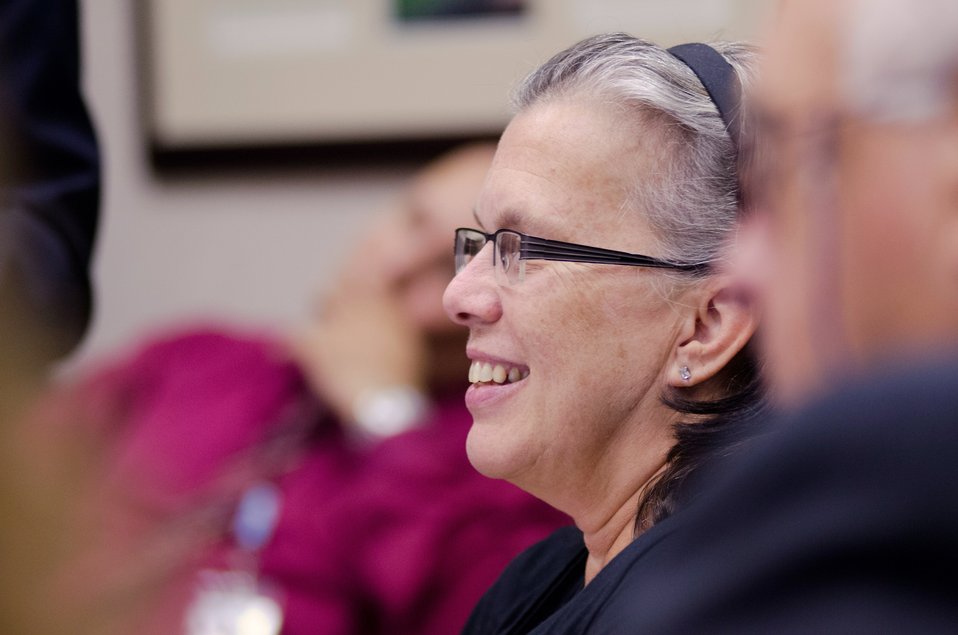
Agricurture Senior Advisor to the Secretary for Tribal Relations Janie Simms Hipp, of the Chickasaw Nation, during the first administrative/training meeting of the U.S. Department of Agriculture's (USDA) Council for Native American Farming and Ranching (CNAFR), held on Monday, Aug. 13, 2012 at the USDA headquarters Whitten Building, in Washington, D.C. CNAFR was created to advise the Secretary on ways to eliminate barriers to participation for Native American Farmers and Ranchers in USDA programs. The Council was established as part of the Keepseagle settlement, and is conducted under the oversight of USDA's Office of Tribal Relations, which is part of the Office of the Secretary of Agriculture. The Director of Tribal Relations Joanna Mounce Stancil serves as Designated Federal Official (DFO) for the Council.